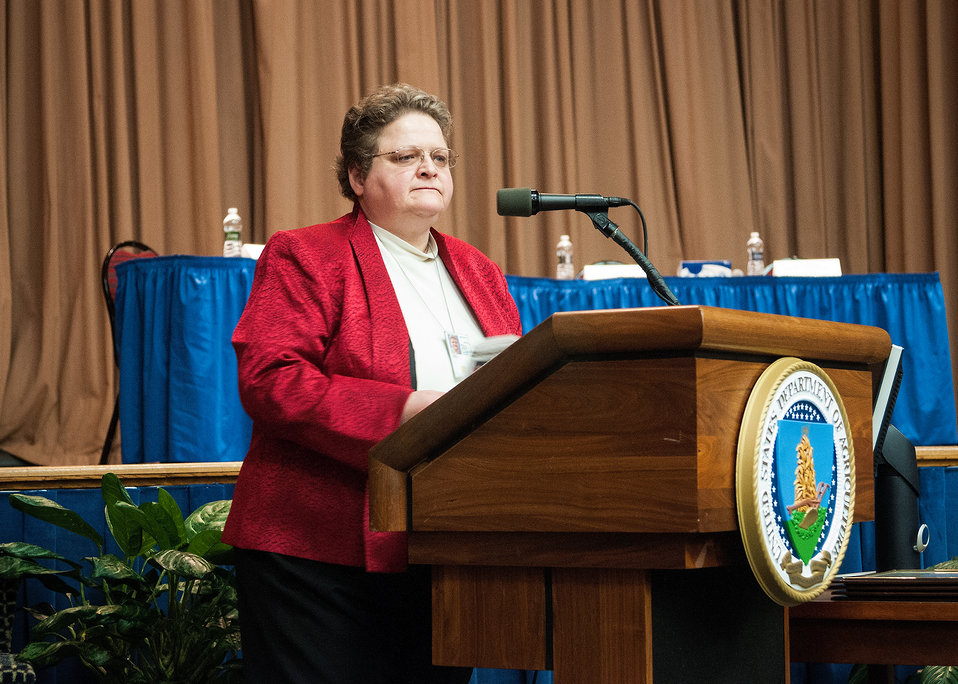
U.S. Department of Agriculture (USDA) Chief Information Officer Cheryl Cook offered welcoming remarks at the at the USDA, Office of the Chief Information Officer (OCIO) celebration of National Women’s History Month at the USDA Jefferson Auditorium in Washington, D.C. on Thursday, Mar. 14, 2013. The USDA OCIO is celebrating Women’s National History Month to commemorate women’s struggles, celebrate centuries of progress and reaffirm women’s steadfast commitment to the rights, security and dignity of women in America and around the world. The theme of this year’s celebration was, “Recognizing American Women’s Outstanding Contributions to the Field of Science, Technology, Engineering and Mathematics,” commonly referred to as STEM.